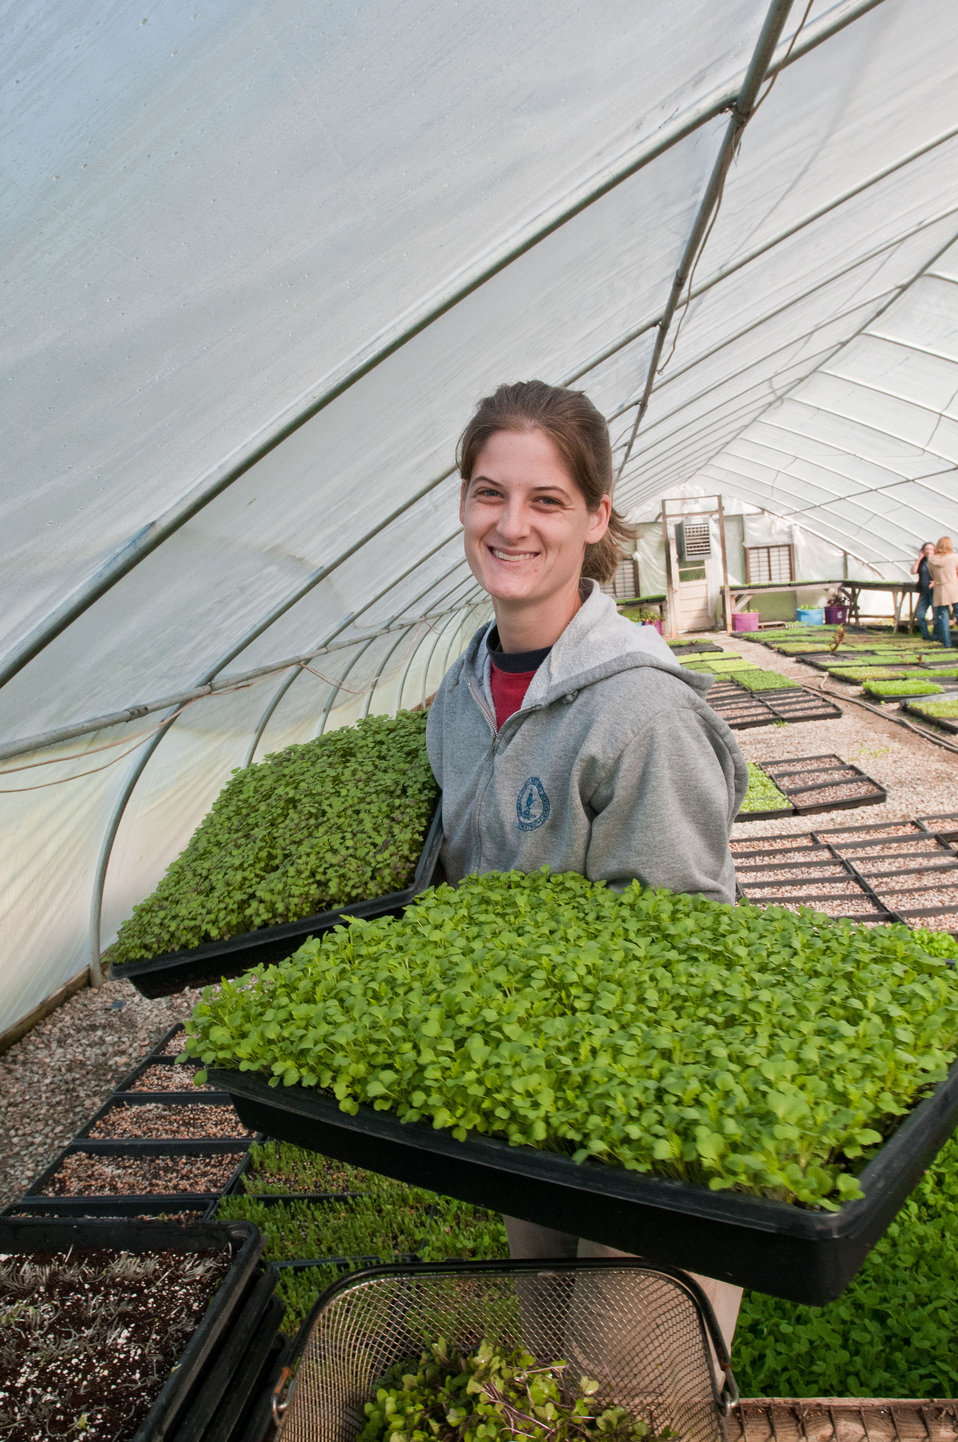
it's the Friday, before Mother's Day weekend, and Kate Lainhart (left) is busy harvesting tray after tray of micro greens at Manakintowne Specialty Growers for local resturants on Friday, May 6, 2011. Manakintowne Specialty Growers is a 21-acre farm in Powhatan County, Virginia, where Jo Pendergraph (second from right), her family and team raise specialty produce for chefs and markets of Richmond, Charlottesville and Williamsburg and a food hub. This includes the online food hub of Lulus Local Food served by the Fall Line Farms cooperative. This is one of the farms that chefs get those seemingly unique greens such as French Sorrel, Pea Shoots, Frisee, Tat soi, Mizuna, Pink/green radish shoots, Sunflower shoots, Baby red mustard, Tuscan Kale, Beet greens. All harvested by hand and scissors micro greens such as Pak choi, Tat soi, Mizuna, Purple kohlrabi, Shungiku (edible chrysanthemum), Ruby chard, Purple/Daikon/Triton radish, Red amaranth and Bull's Blood Beet. To be enjoyed by the eyes and mouth, edible flowers such as African Blue Basil, Nasturtiums, Johnny Jump Ups, and Chive blossoms Dianthus (pinks) are grown here. The seasonal choices are listed by suppliers and ordered by members on Lulus Local Food website, the food is distributed to pick-up points in the Richmond area. Together, they offer a wide variety of household food staples and specialty fruits, vegetables, meats, soaps, eggs, cheeses, flowers, honey, pastas, sauces, syrups, baked goods, mushrooms, flour and grains from and for the Richmond area.